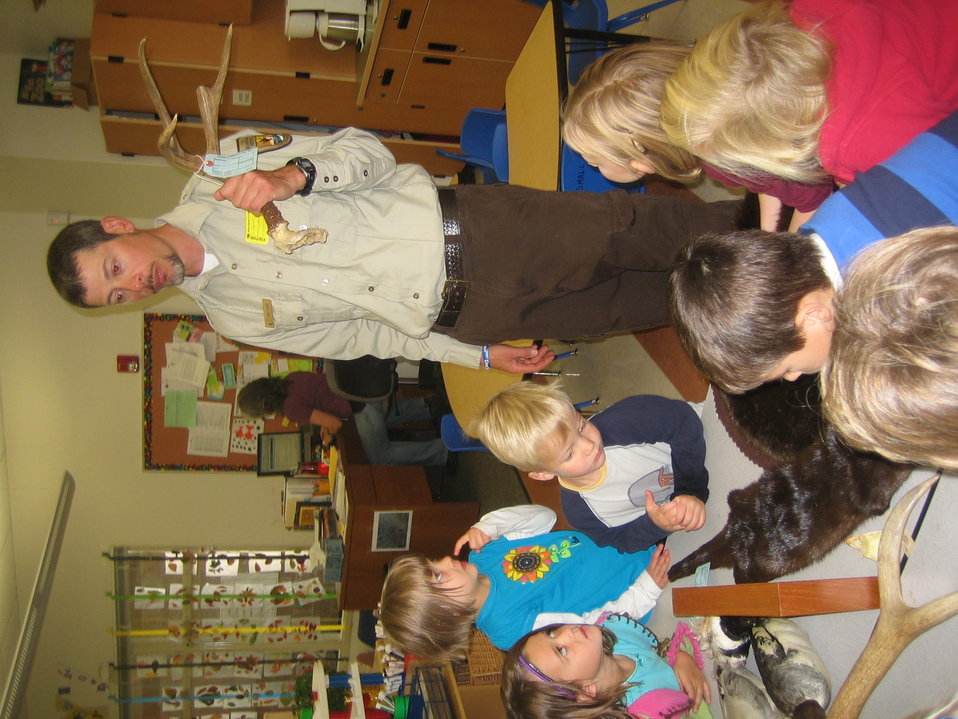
Scientists in the Community Program

U.S. Fish and Wildlife Service Mountain-Prairie Region Deputy ARD for External Affairs, Matt Kales, introduces early childhood education students at William Roberts Elementary School in Denver to some of Colorado's native and historic wildlife species.